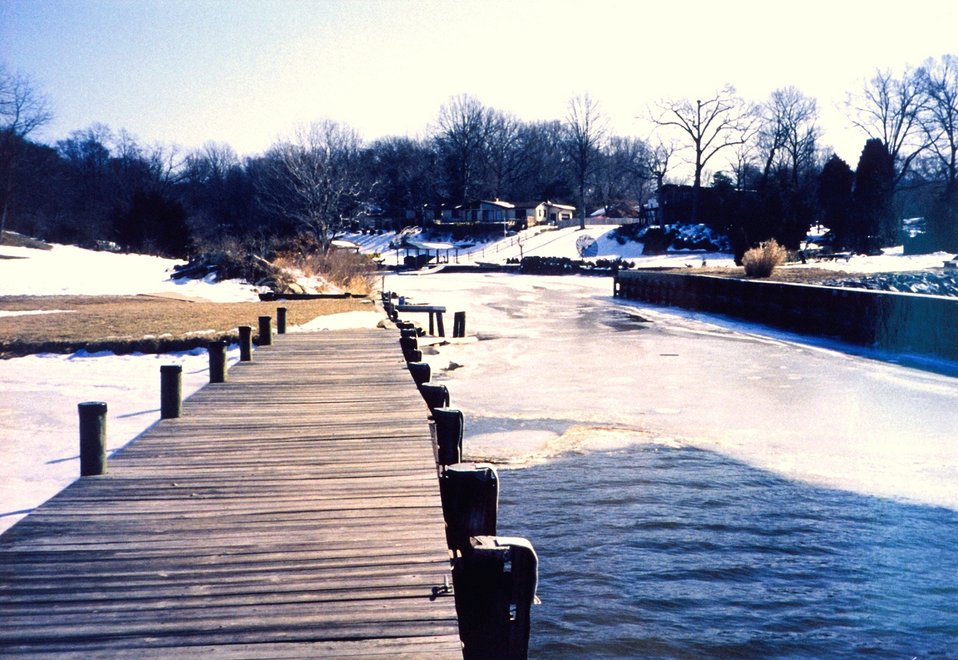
Winter and ice along the Patuxent River.